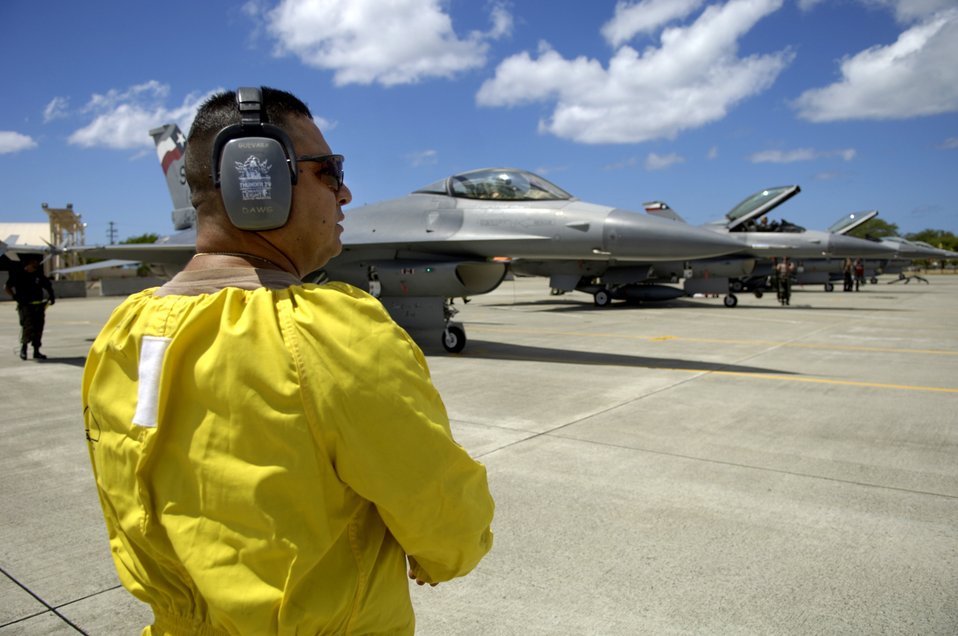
Eagles, Falcons face off in air exercise

Tech. Sgt. Gerardo Guevara waits for the F-16 Fighting Falcons to shut down their engines before conducting his post-flight checks at Hickam Air Force Base, Hawaii, Sept. 8. Six F-16s from the Texas Air National Guard's 149th Fighter Wing came to Hickam to participate in Exercise Sentry Aloha. Sergeant Guevara is a maintainer from the 149th FW.